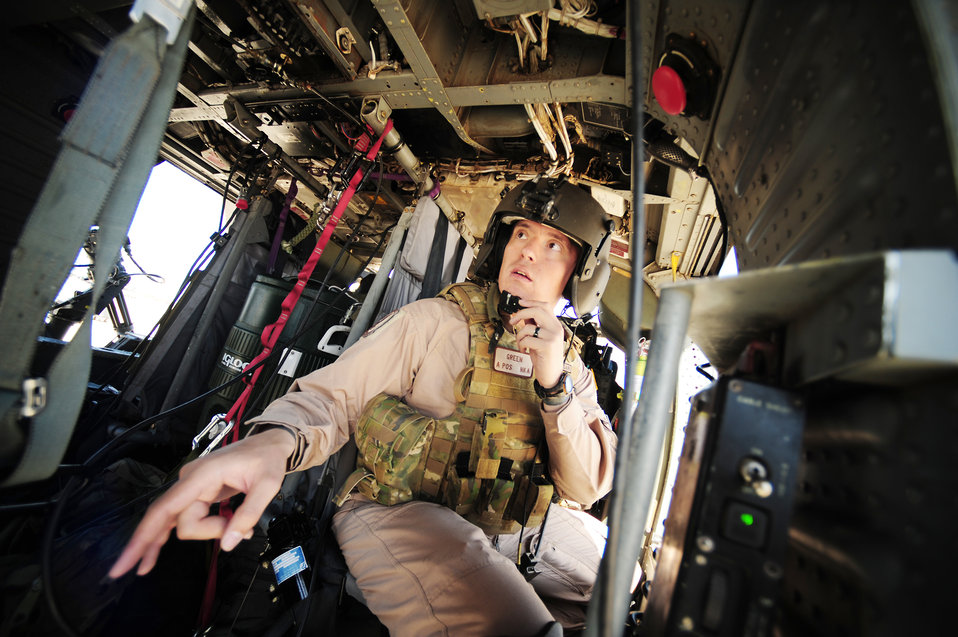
Angel Thunder 2010

Staff Sgt. Andrew Green performs a pre-flight checklist during Angel Thunder 2010, April 15, 2010, near Davis-Monthan Air Force Base, Ariz. Angel Thunder 2010, an Air Combat Command sponsored exercise, will be the largest personnel recovery and combat search and rescue exercise to date, combining Department of Defense and non-DOD assets.